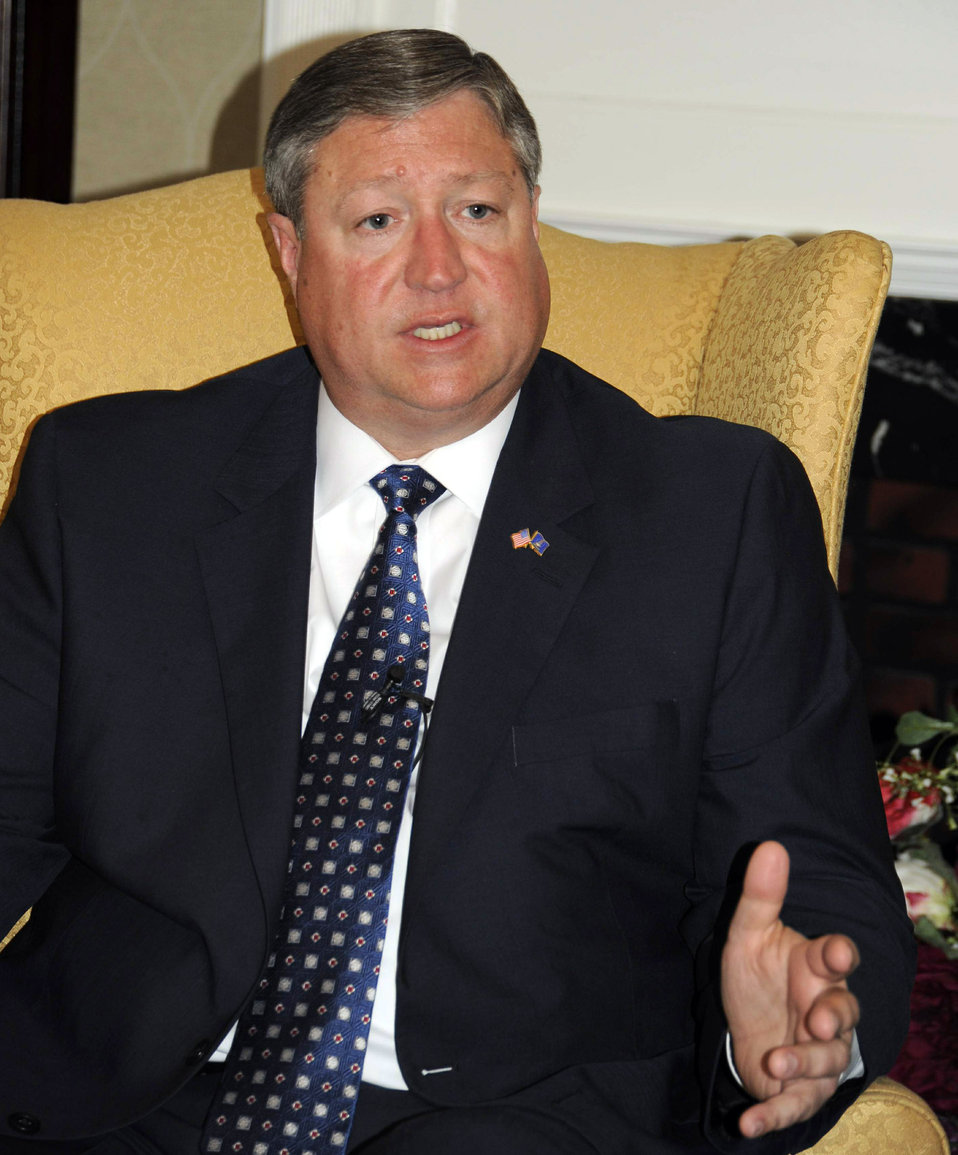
Air Force secretary discusses goals, priorities

Air Force Secretary Michael B. Donley discusses the service's nuclear enterprise mission, Airmen at war and taking care of Airmen April 23 while visiting the campus of the College of William & Mary in Williamsburg, Va. The secretary also led a panel discussion on